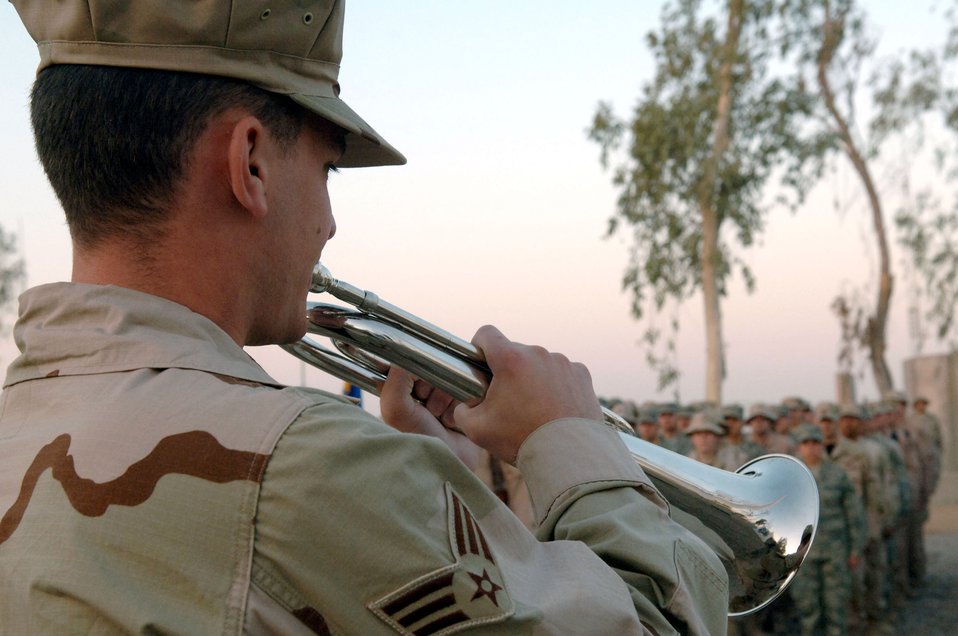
Balad Airmen celebrate Air Force's birthday

Members of the 332nd Air Expeditionary Wing stand at attention as Senior Airman Darren Ruch plays